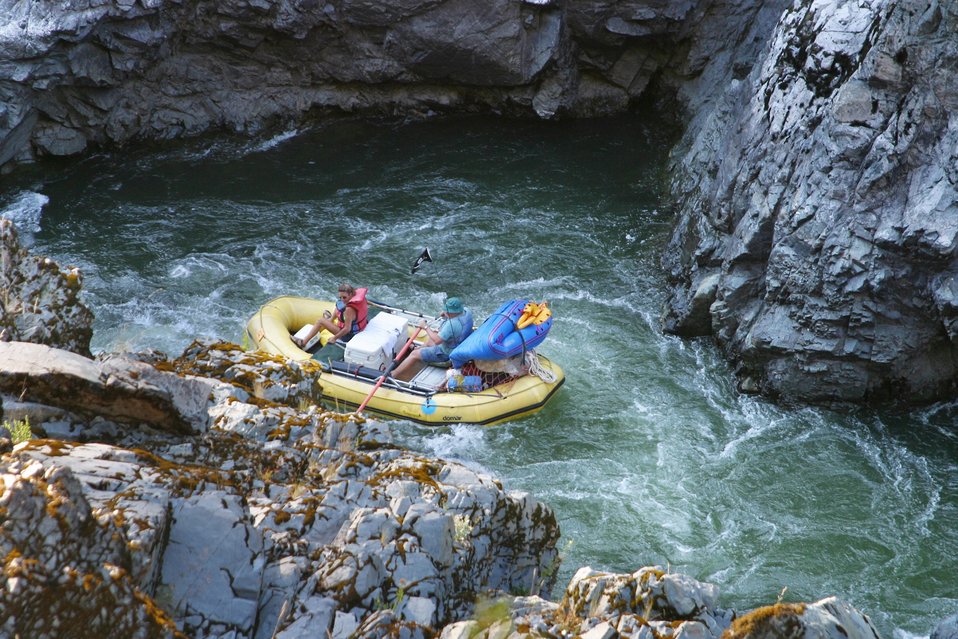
Raft in the Narrows below Mule Creek.